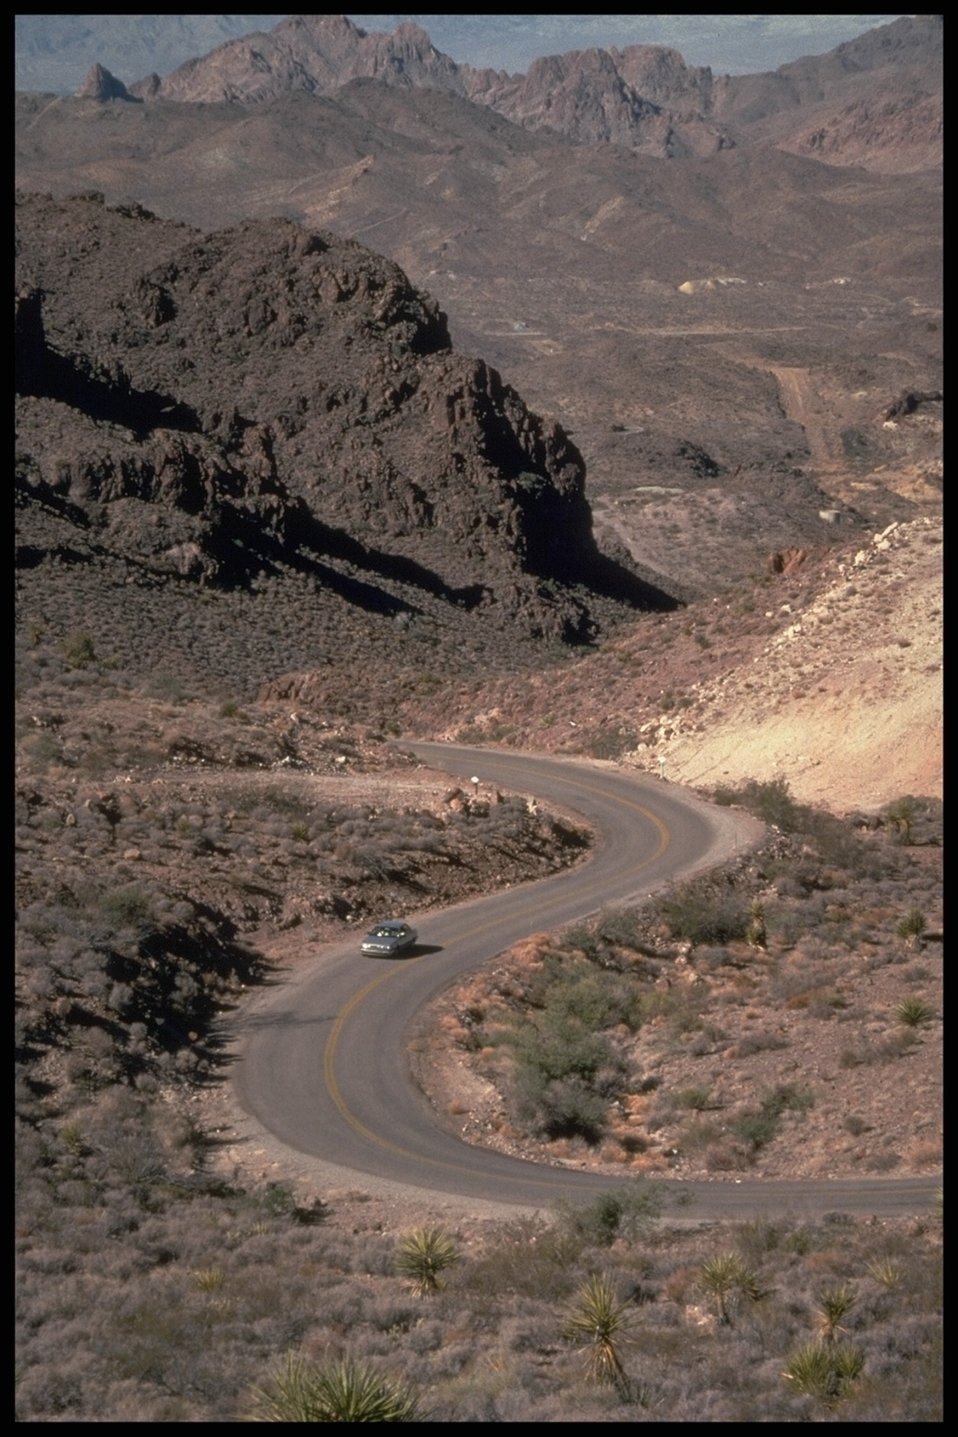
A road winds through Arizona public lands.